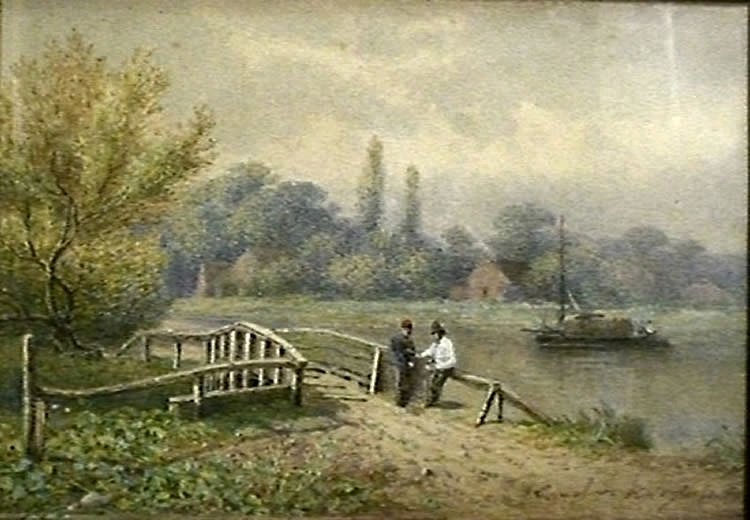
Couple de Paysans Accoudes Sur un Pont, 1869, 6.3 x 8.3 in. watercolor on panel by Cornelius Krieghoff